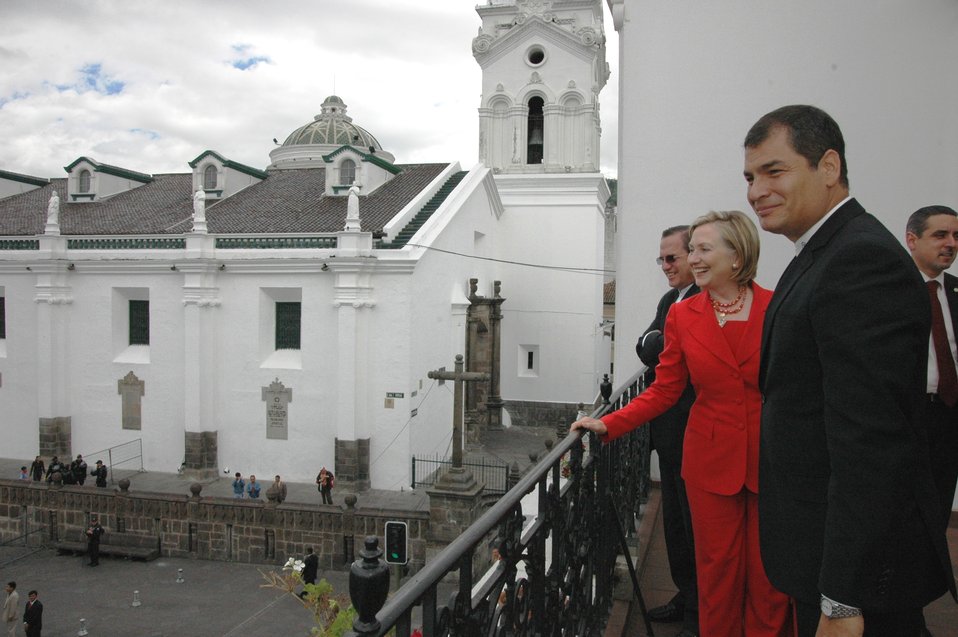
Ecuadorian Foreign Minister Patino, Secretary Clinton, and Ecuadorian President Correa View Independence Square

Ecuadorian Foreign Minister Patino, U.S. Secretary of State Hillary Rodham Clinton, and Ecuadorian President Correa look out over the balcony of Carondelet Palace onto Independence Square in the historic center of Quito, Ecaudor, on June 8, 2010.